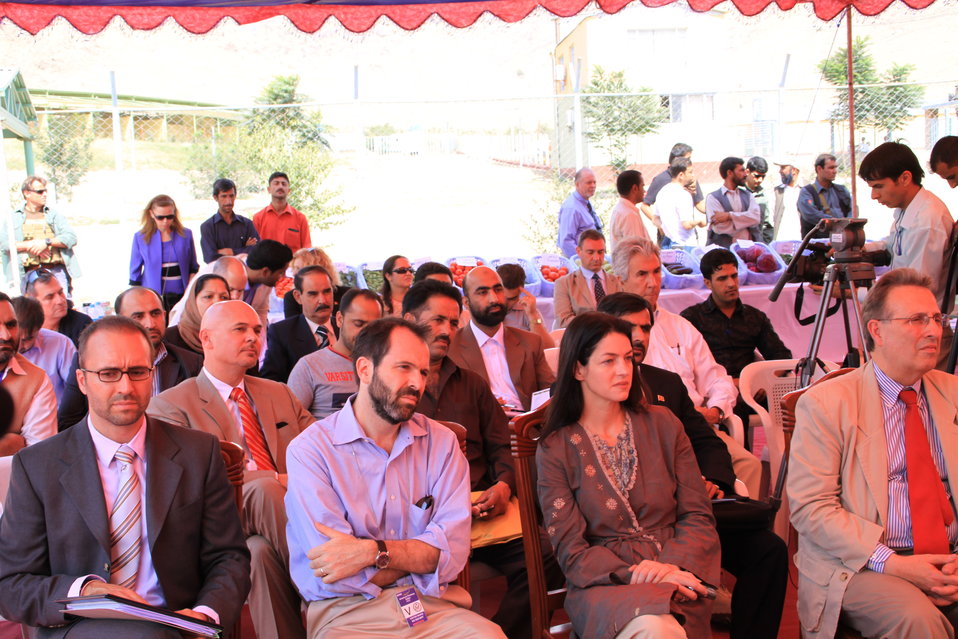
Badam Bagh Farm